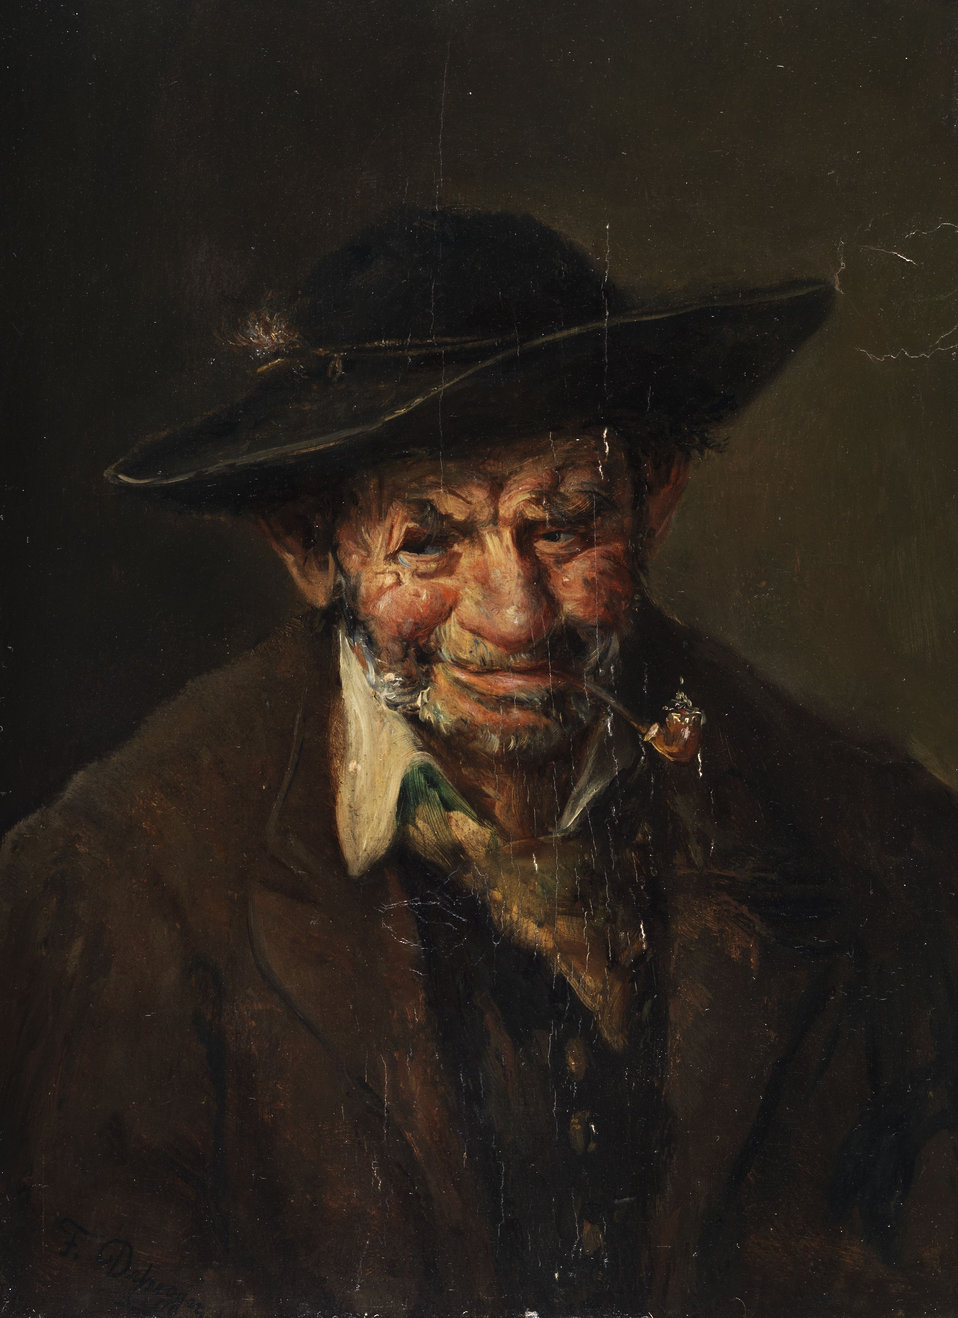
Franz von Defregger Brustbild eines alten Bauern 102393